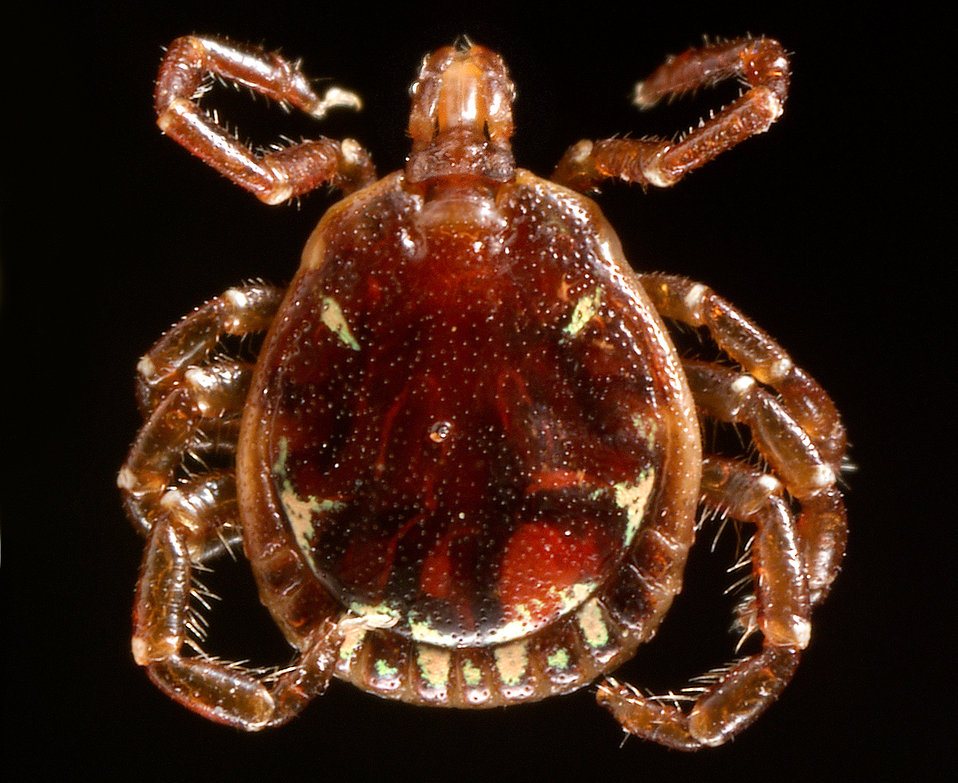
This photograph depicted a dorsal view of a male "lone star tick", Amblyomma americanum.